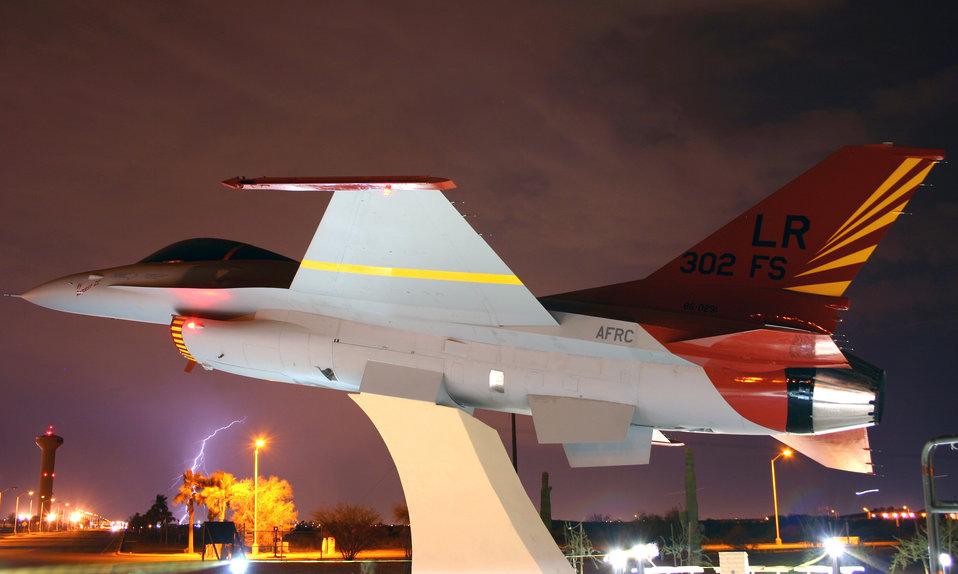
Airpark dedication honors Tuskegee Airmen

Aircraft 86-0291 sits in the Tuskegee Airmen Memorial Airpark in front of the 944th Fighter Wing at Luke Air Force Base, Ariz. The airpark was dedicated Aug. 2 during a ceremony in which more than 50 original Tuskegee Airmen attended.